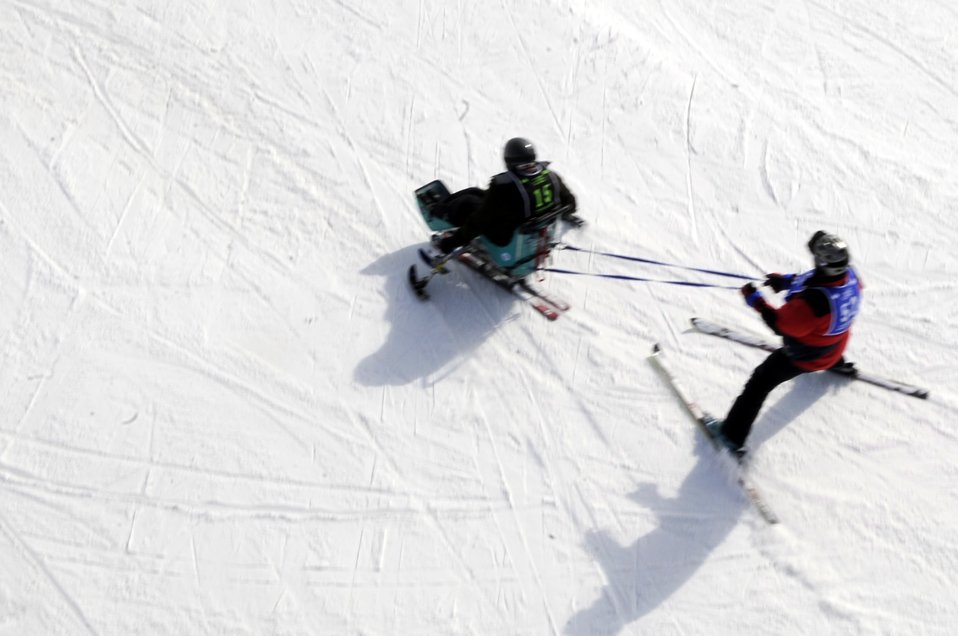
23rd National Disabled American Veterans Winter Sports Clinic

A veteran on a mono-ski starts down the slope while tethered to a ski instructor Mar. 31 during the 23rd National Disabled American Veterans Winter Sports Clinic in Snowmass Village, Colo.